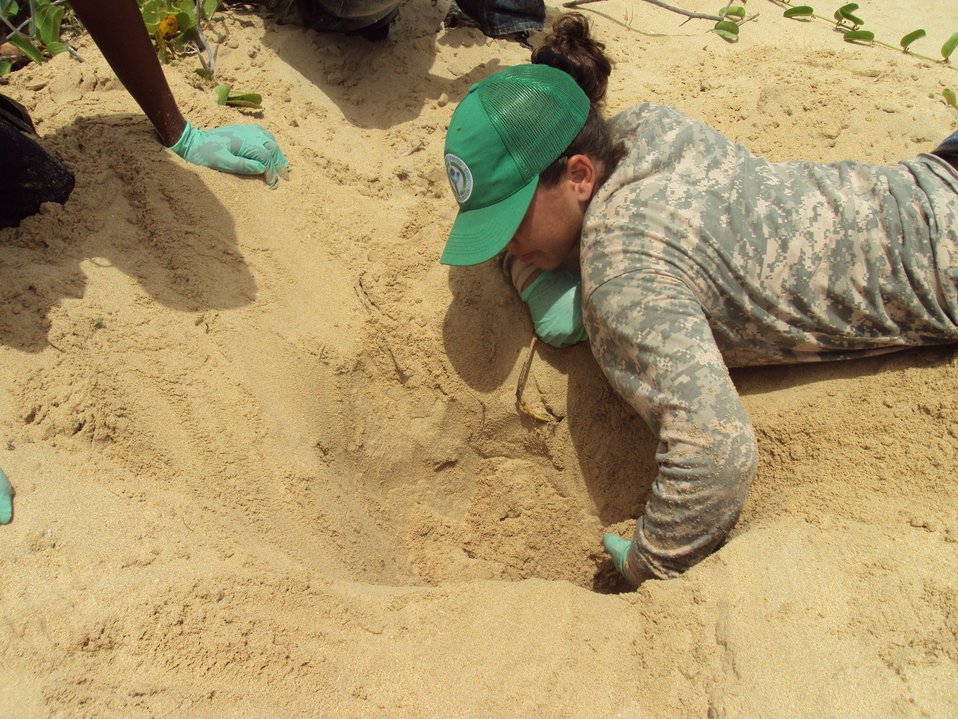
Culebra Natl Wildlife Refuge, Puerto Rico

Relocating nests, Credit USFWS